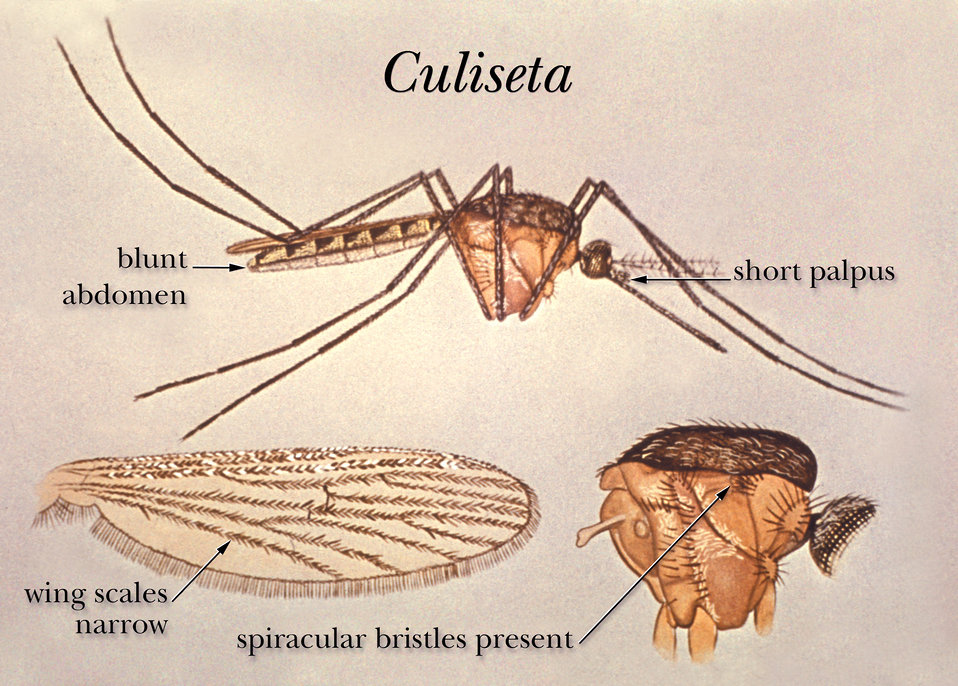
This illustration depicts the wing bristles of a Culiseta mosquito.